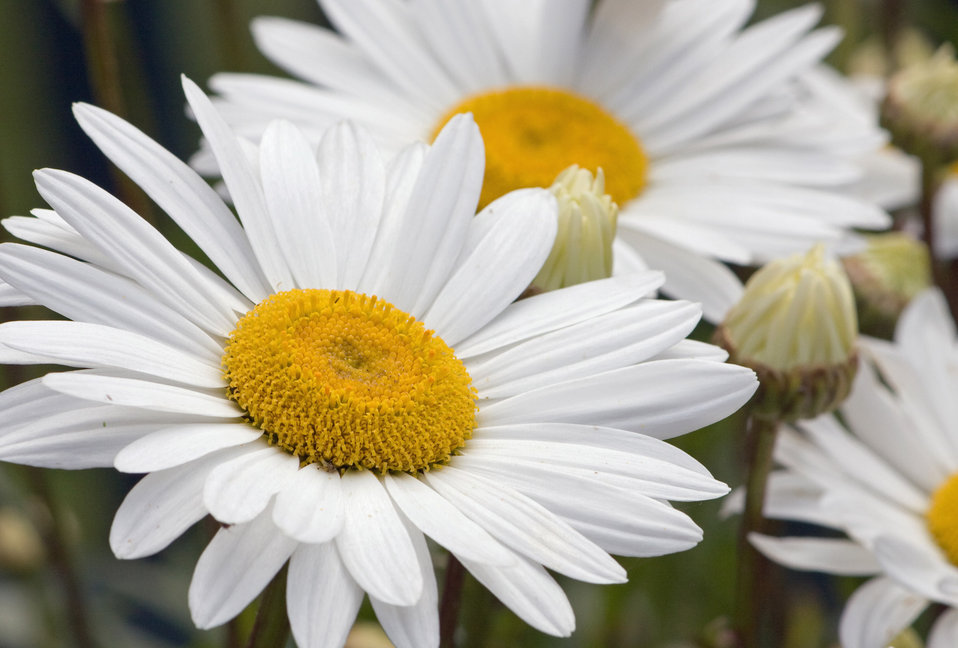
Daisy flowers white

White daisy flowers close-up.